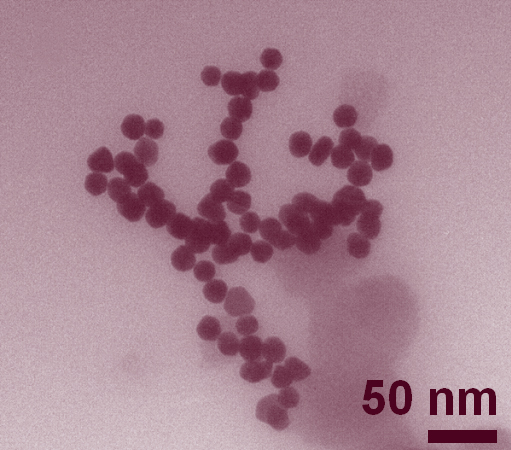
Nanoparticles

Clusters of roughly 30-nanometer gold nanoparticles imaged by transmission electron microscopy. (Color added for clarity.)